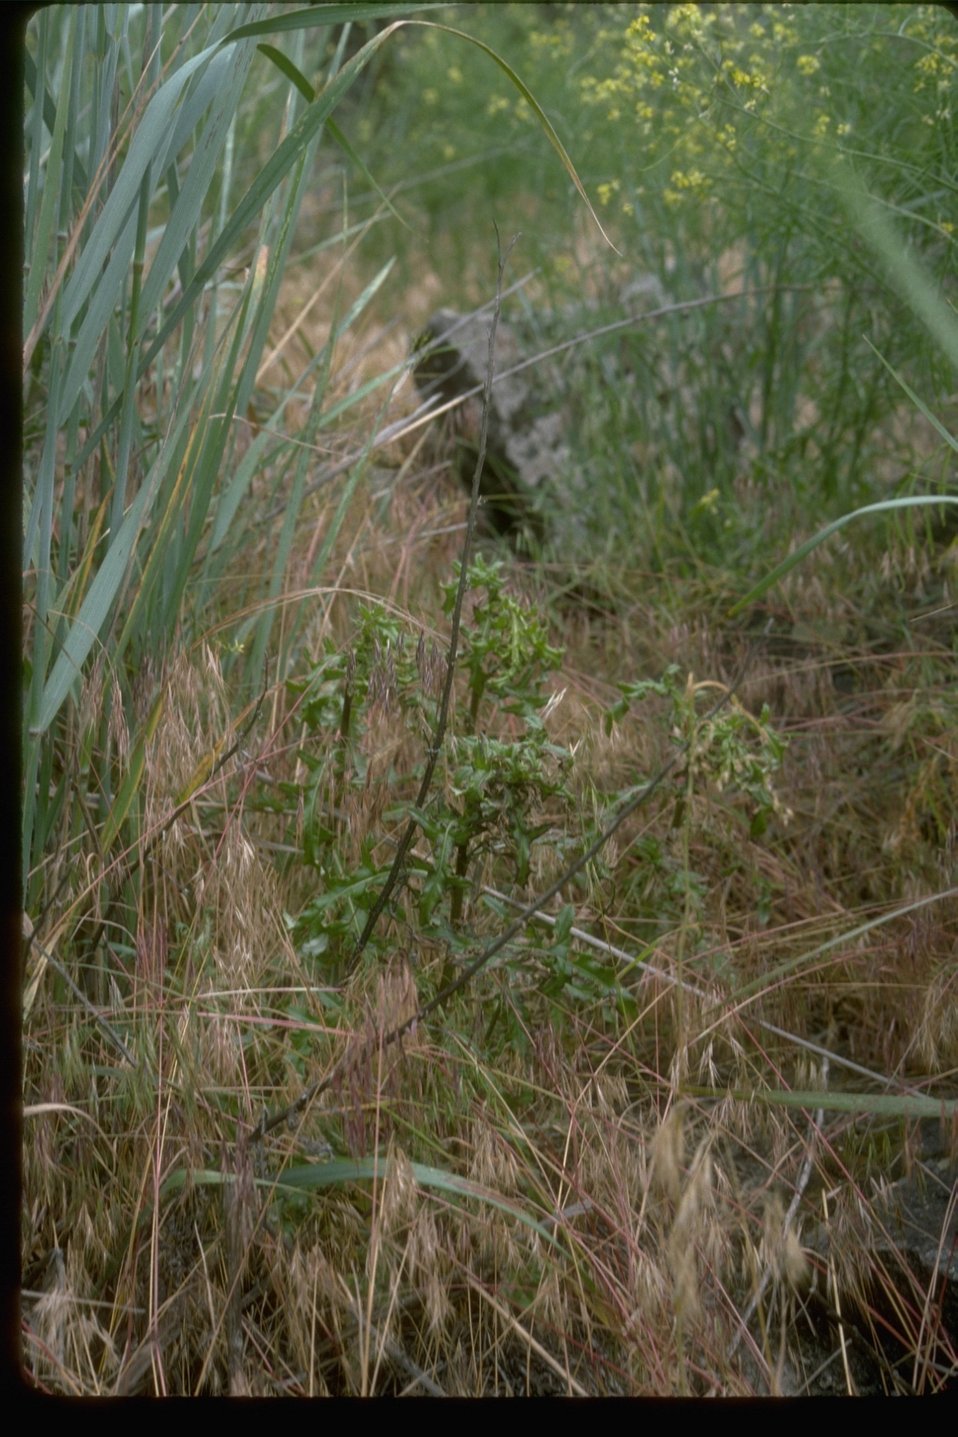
Canada Thistle treated with herbicide.